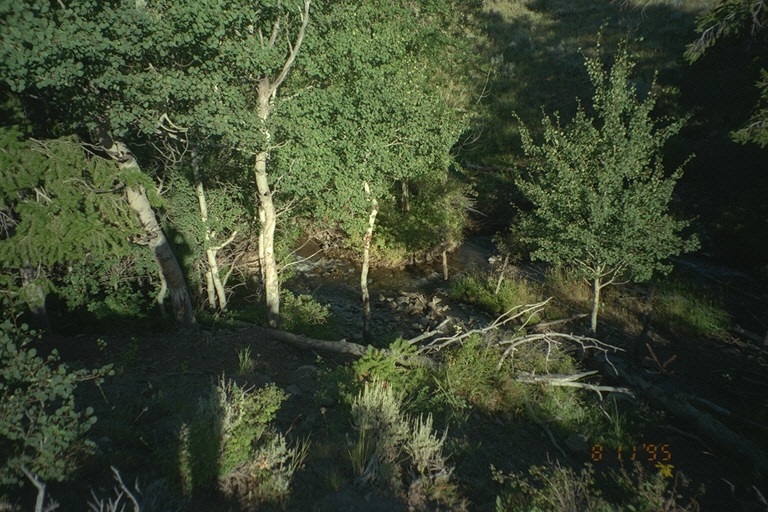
Riparian area Public Lands Salmon Field Office UCSC Upper Columbia Salmon Clearwater District